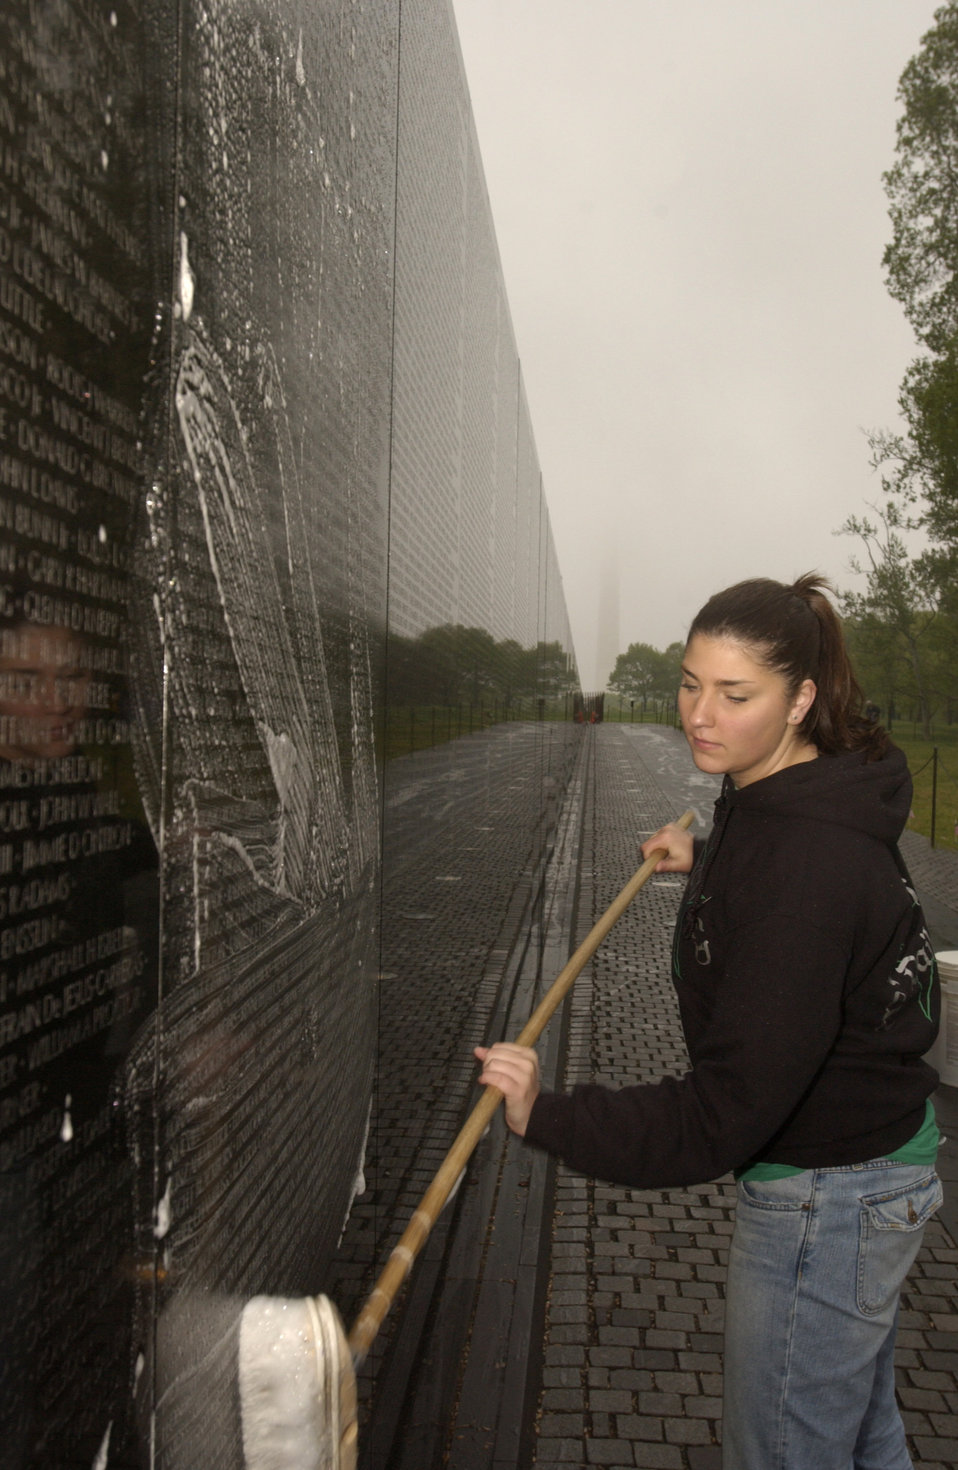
AFSA members clean Vietnam Memorial

Airman 1st Class Laura Dailey scrubs the Vietnam Veterans Memorial on Saturday, April 22, 2006. More than 140 members of the Air Force Sergeants Association met in the nation's capital to clean the memorial early in the morning before tourists arrived. Airman Dailey is assigned at Pope Air Force Base, N.C.